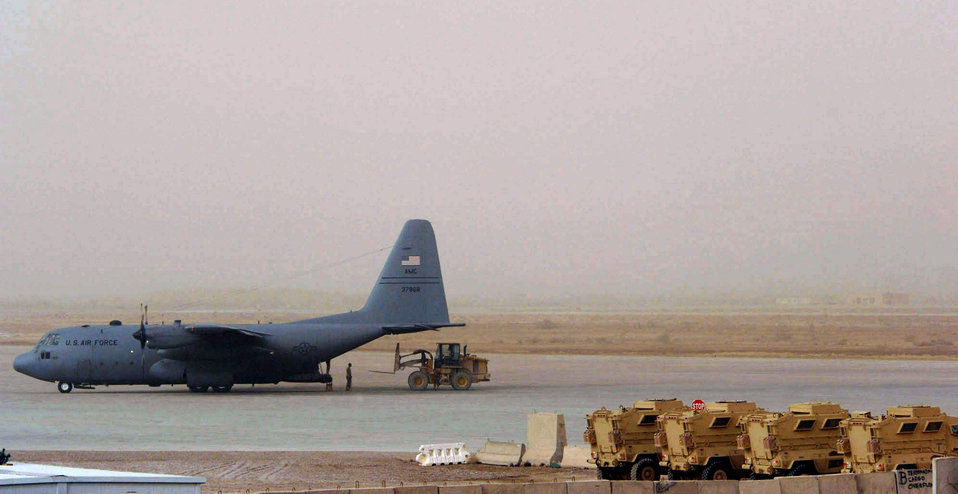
Now boarding

Members of the 447th Air Expeditionary Group unload a baggage pallet from a C-130 Hercules Jan. 21 at Sather Air Base, Iraq. Sather AB is located on the west side of Baghdad International Airport and base Airmen move 6,200 passengers weekly and more than 1,700 tons of cargo weekly.